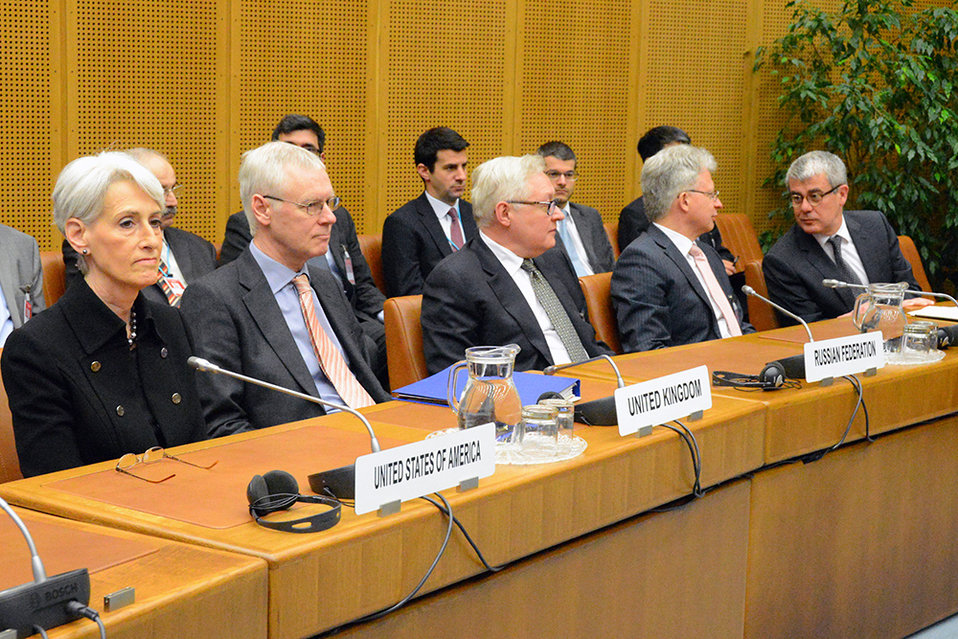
Under Secretary Sherman Participates in the P5 1 Talks on Iran's Nuclear Program

Under Secretary for Political Affairs Wendy Sherman participates in the P5 1 talks on Iran's nuclear program in Vienna, Austria, on April 8, 2014.